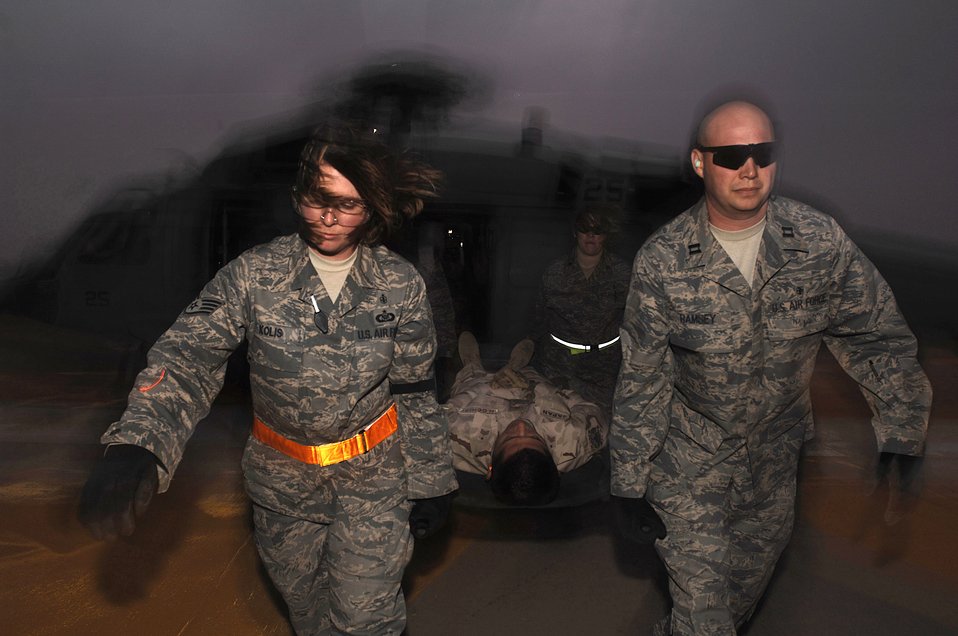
Steady as she goes

Staff Sgt. Christi Kolis, Capt. Kevin Ramsey and Maj. Adrienne Goodknight (rear) move a